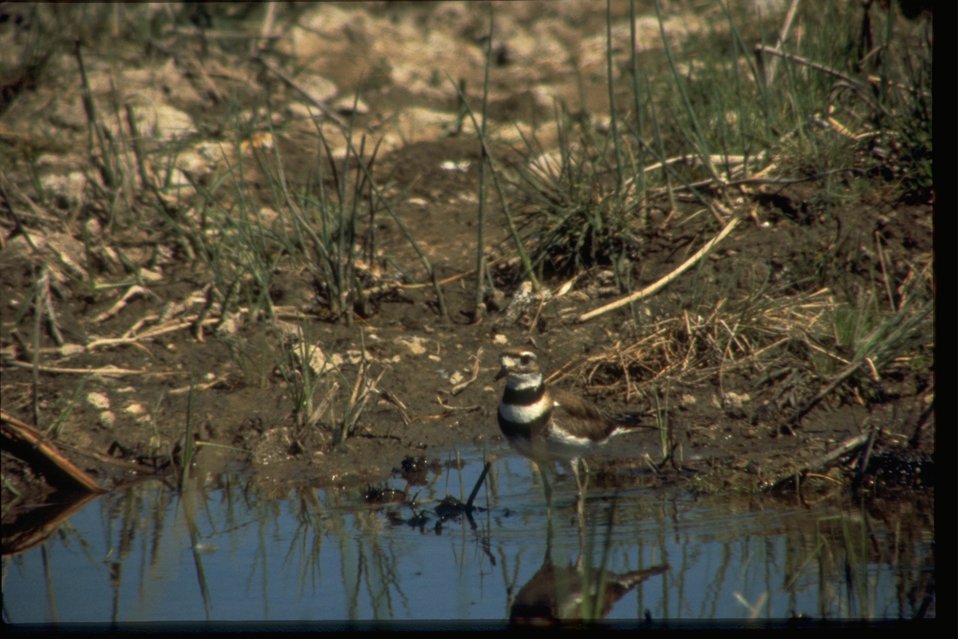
A single Killdeer standing in small pond.